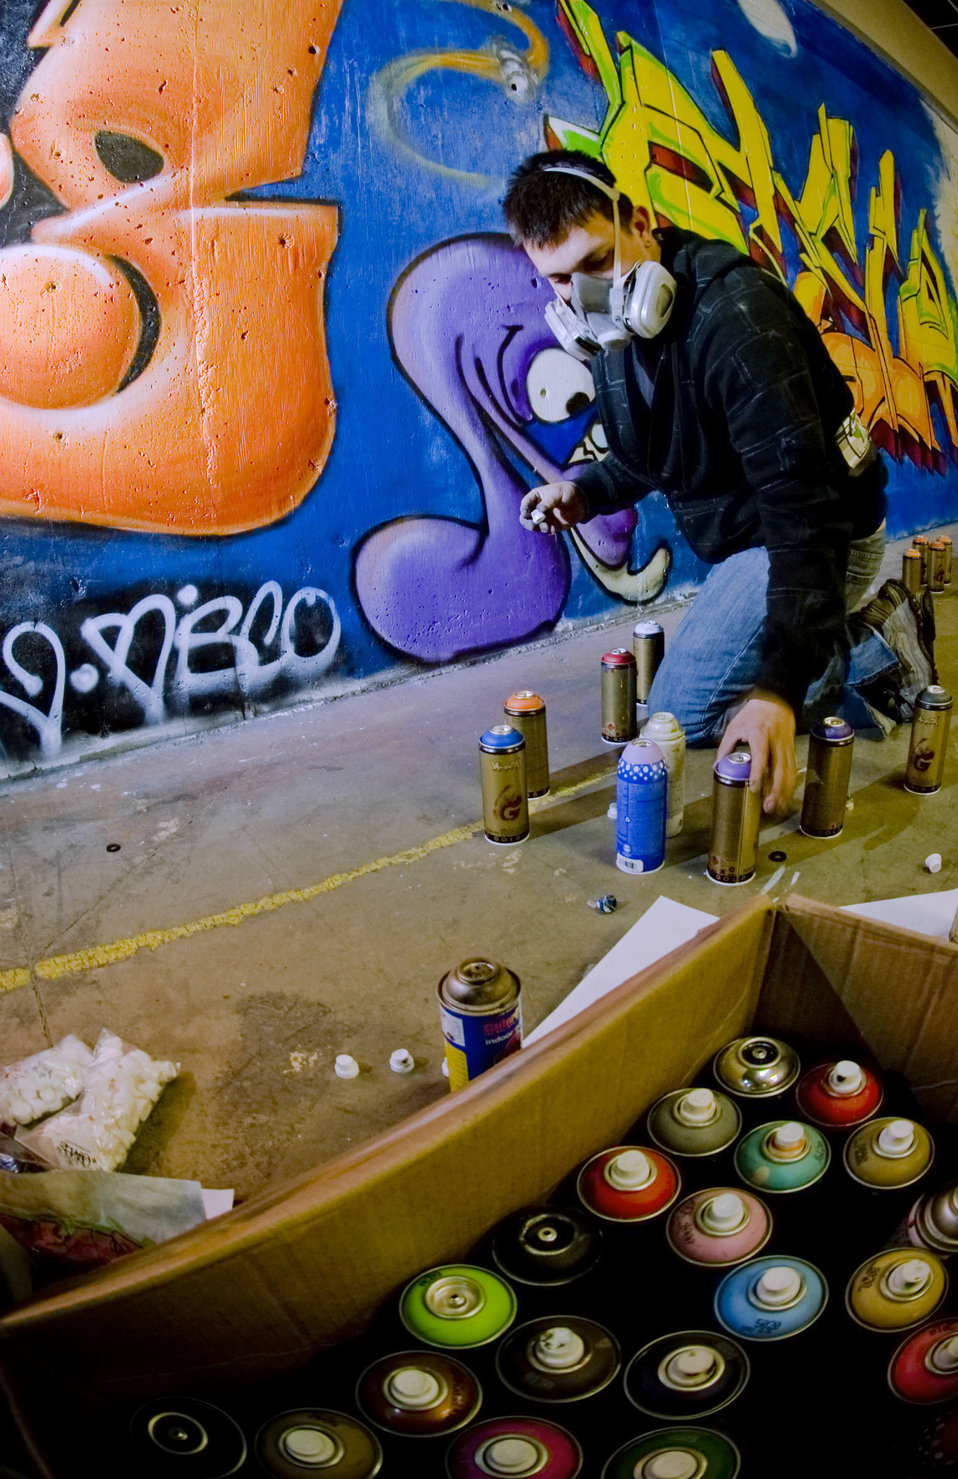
It's not graffiti, it's art

Staff Sgt. Art Delafuente switches out his caps on a spray can to